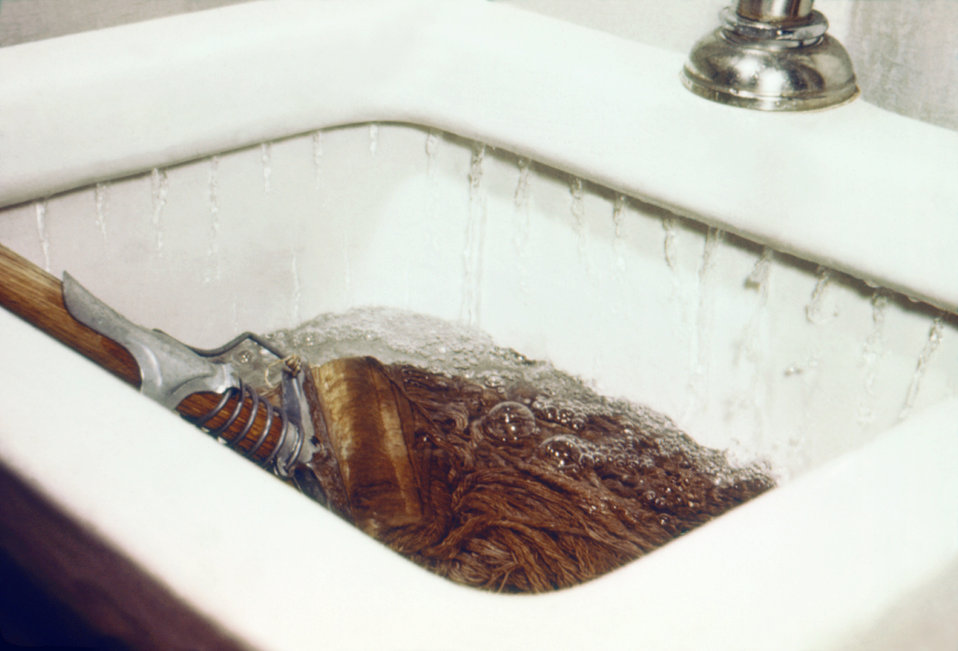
The configuration of this sink is an example of improper water supply conditions, for back-siphonage of dirty water is possible.